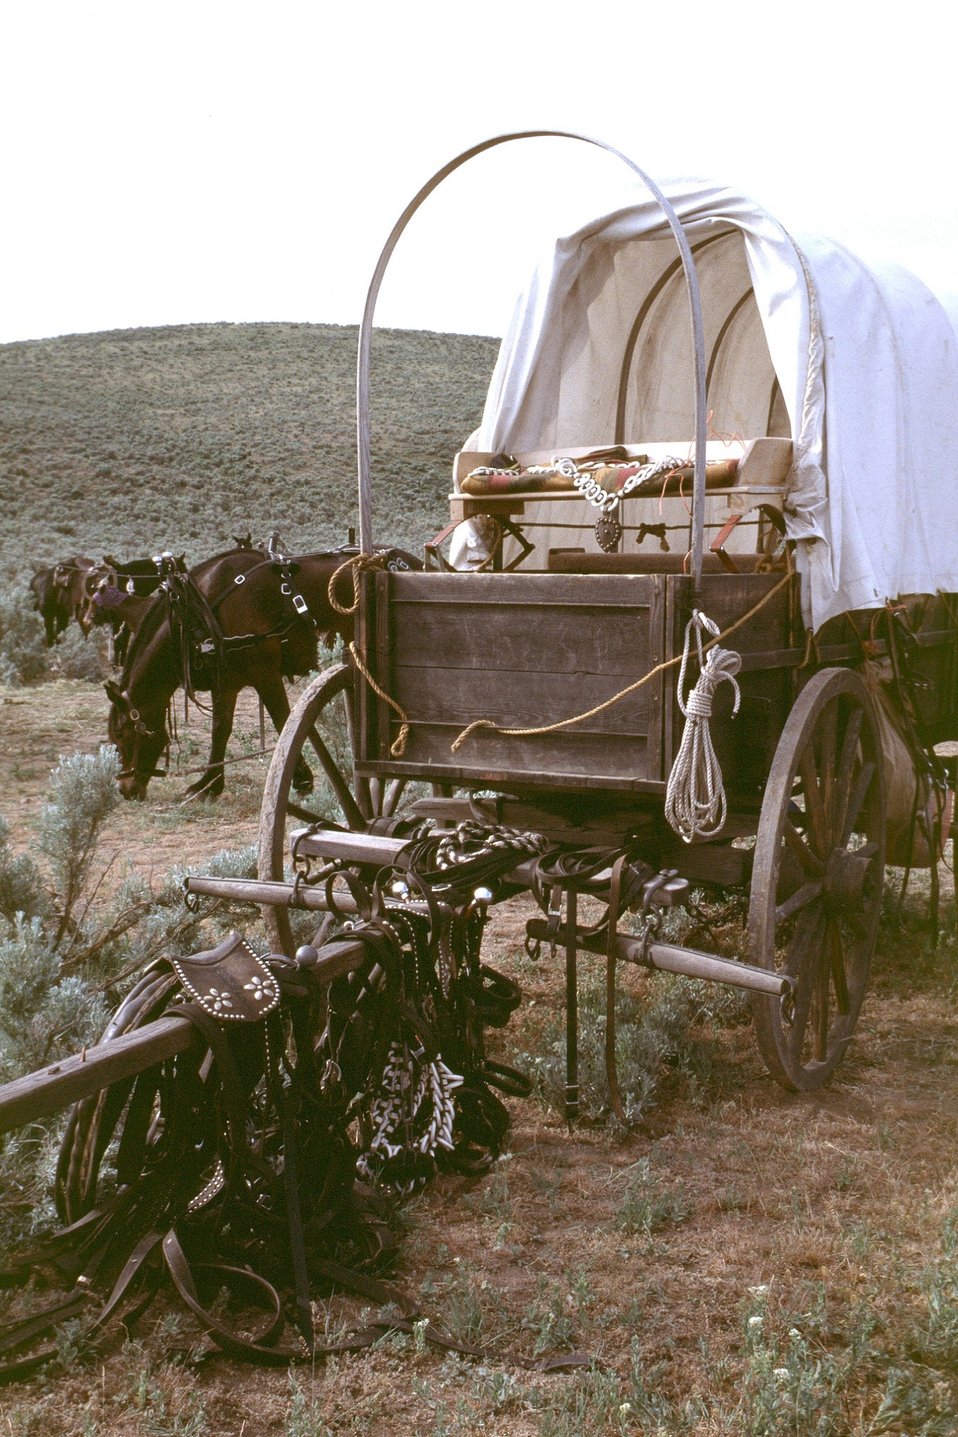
NHOTIC 10th Anniversary, wagon train reenactment. Covered wagon and grazing horses on the Oregon Trail.